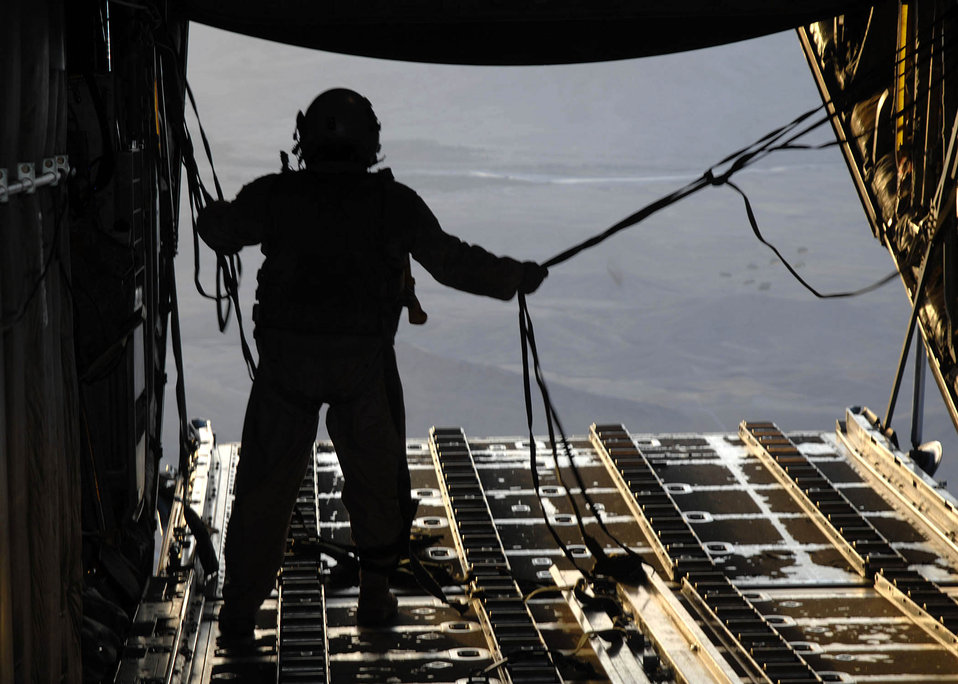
C-130s put troops, supplies on target in Afghanistan

Senior Master Sgt. Roy Self cleans the ramp area after eight bundles of supplies were airdropped from a C-130 Hercules to troops in the field by the 774th Expeditionary Airlift Squadron from Bagram Air Base, Afghanistan. The airdrop crew are Air National Guard with the 165th Airlift Wing from Louisville, Ky., and the 109th Airlift Wing from Schenectady, N.Y.